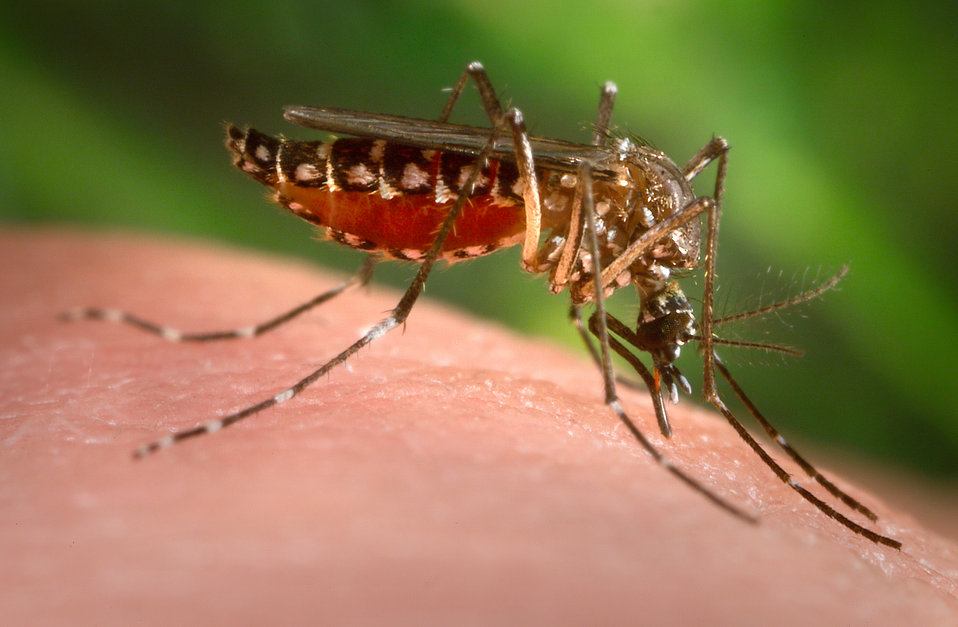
This 2006 photograph depicted a female Aedes aegypti mosquito as she was in the process of obtaining a "blood meal", which normally is from an unsuspecting host, but in this case, the CDC's biomedical photographer, James Gathany, had volunteered his own hand in order to entice the insect to alight, and feed. Note that having penetrated the skin surface with its sharply-pointed fascicle, the feeding mosquito was collecting its blood meal in its distended abdomen, evidenced by the red coloration visible through the stretching, translucent exoskeletal abdominal exterior. See PHIL # #8924, for this mosquito's appearance before the ingestion of its blood meal. If you look carefully, you can also see that the labium, which is the soft tissue sheath that envelopes the sharply-pointed fascicle, had slid up the fascicle, and took on a "kinked" configuration, pointing posteriorly.